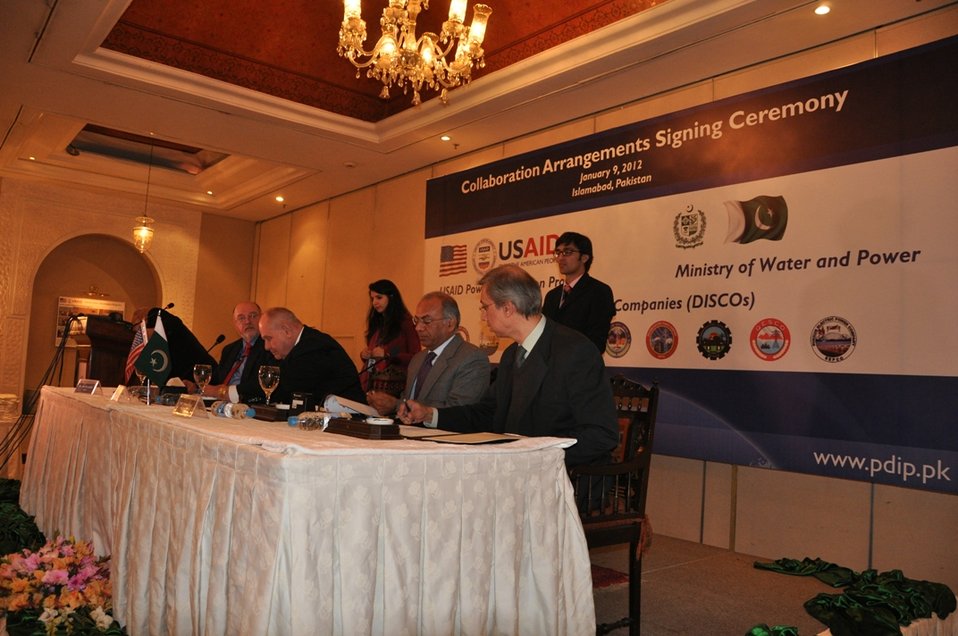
Collaboration Arrangements Signing Ceremony

All nine of Pakistan’s government-owned Power Distribution Companies (DISCOs) signed agreements today with the U.S. government to collaborate on improving energy supply to consumers.